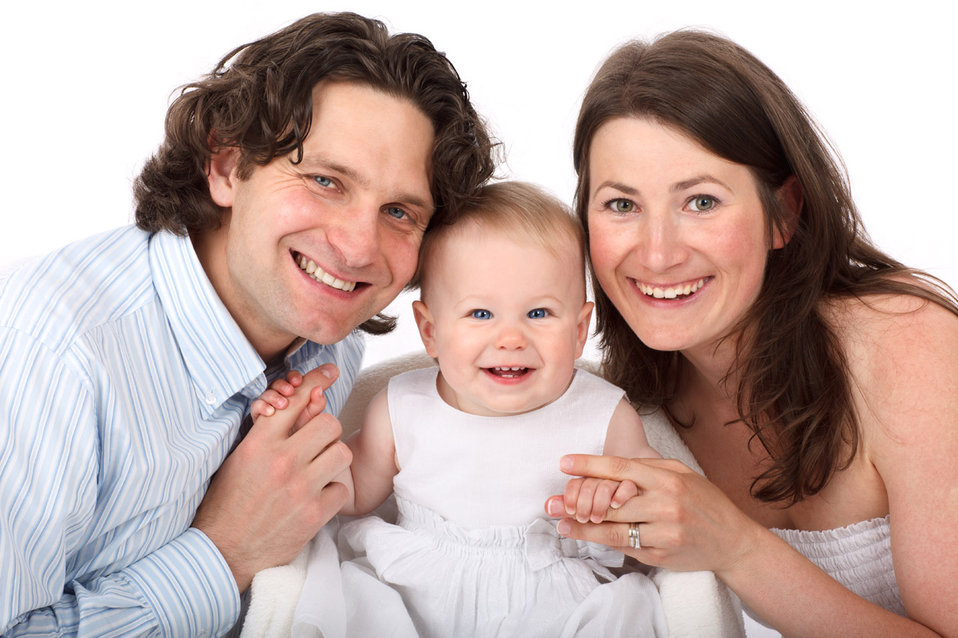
Family of three

Mom, dad and her baby girl smiling isolated on white background.